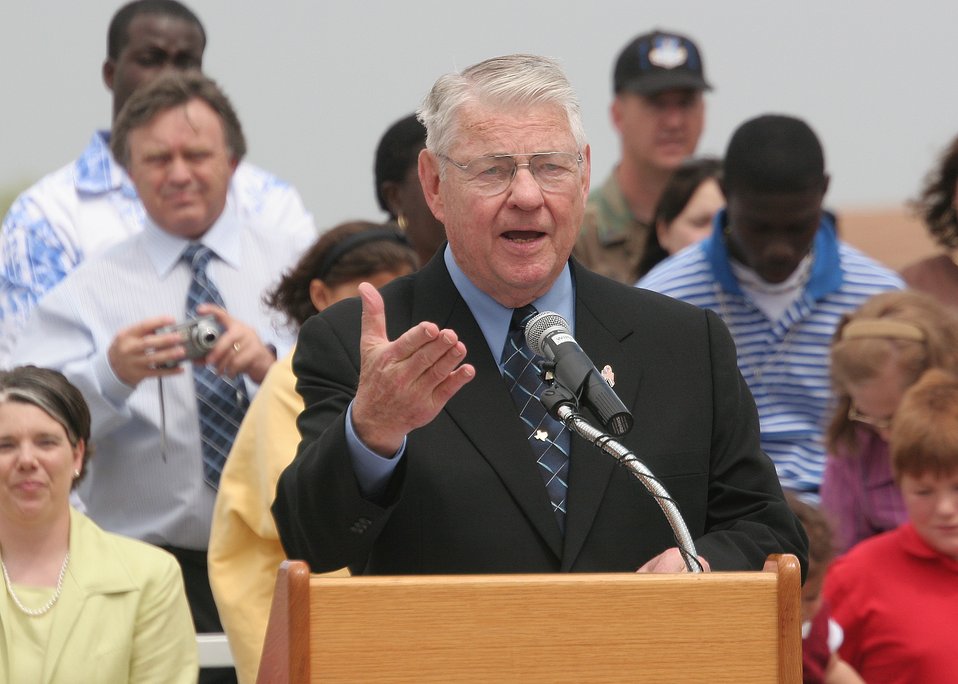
Lackland NCO academy renamed to honor CMSAF Gaylor

The fifth Chief Master Sergeant of the Air Force, Robert D. Gaylor, addresses a crowd at Lackland Air Force Base, Texas, on Thursday, March 30, 2006. The Lackland noncommissioned officer academy was renamed the Robert D. Gaylor NCO Academy during a dedication ceremony.